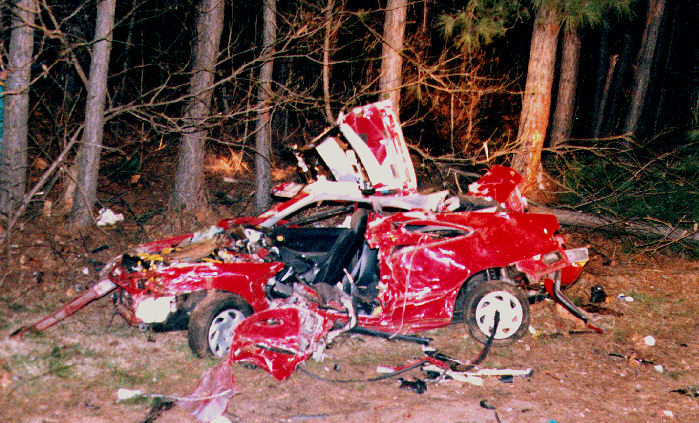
Wrecked car in which three teenagers died.